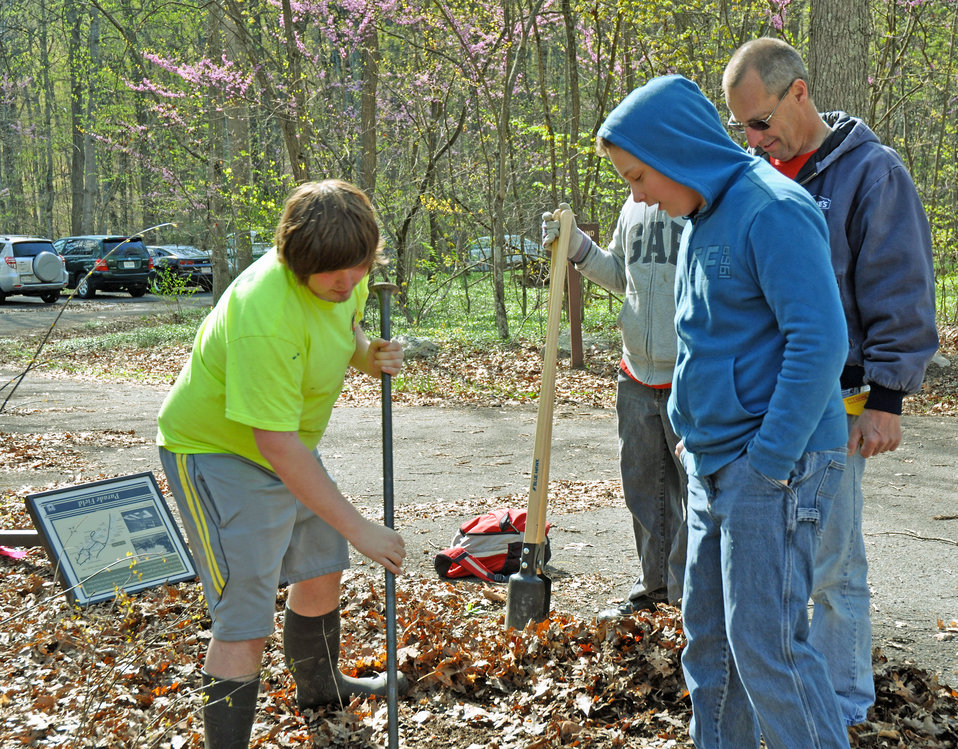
CCC3-a

Scouts from Boy Scouts of America Troop 88 dig a hole for a new interpretative sign in the George Washington and Jefferson National Forest in Virginia on Apr. 20, 2013. The first Civilian Conservation Corps (CCC) camp, Camp Roosevelt, was established in April 17, 1933 at the George Washington and Jefferson National Forest in Virginia.